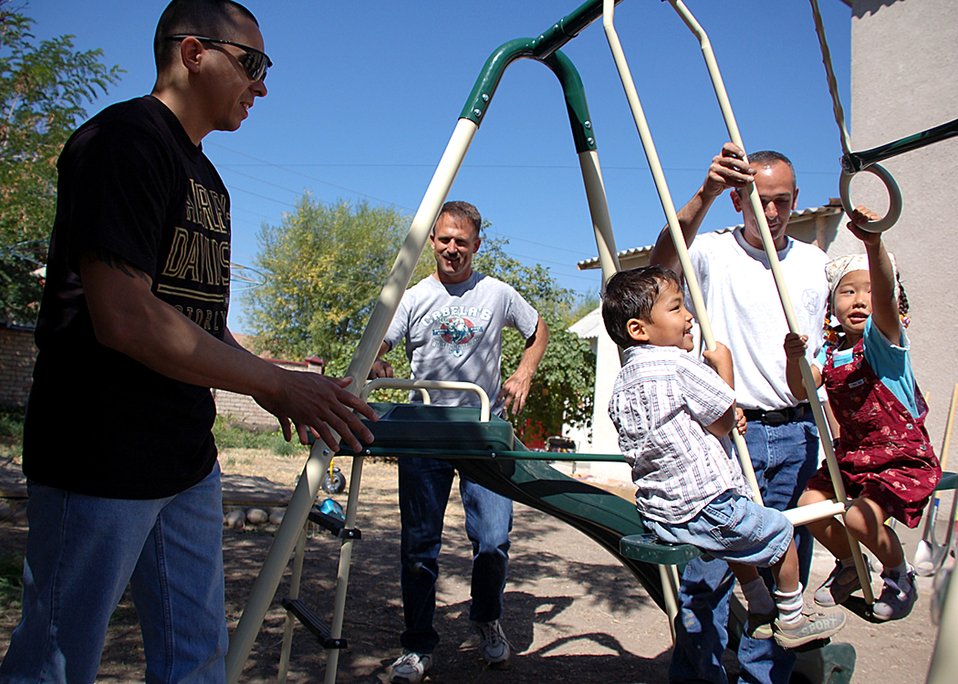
Manas Top 3 Council swings into action in Kyrgyzstan

Master Sgt. Ronald Petersen looks on as Master Sgt. Paul Julbes and Master Sgt. Marvin Wagoner push two of the children on a swing set the Airmen just built at the Umut-Nadjeshda Children's Rehabilitation Center Aug. 20 in Bishkek, Kyrgyzstan. Sergeant Petersen and Wagoner are assigned to the 376th Expeditionary Civil Engineer Squadron, and Sergeant Julbes works at the 376th Expeditionary Aircraft Maintenance Squadron. They are all members of the Top Three Council from Manas Air Base, Kyrgyzstan.